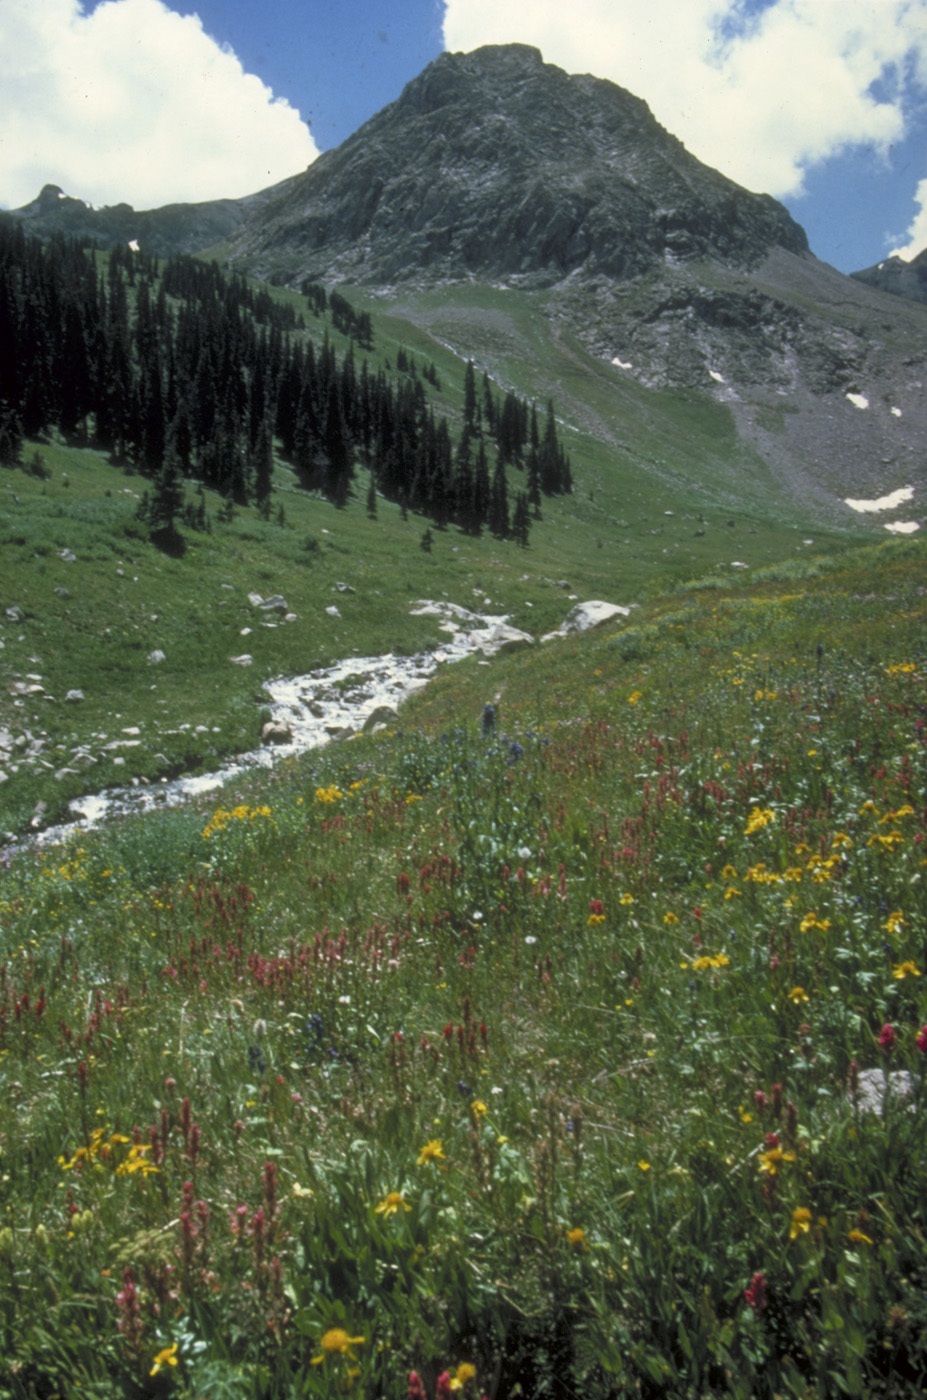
Back Country